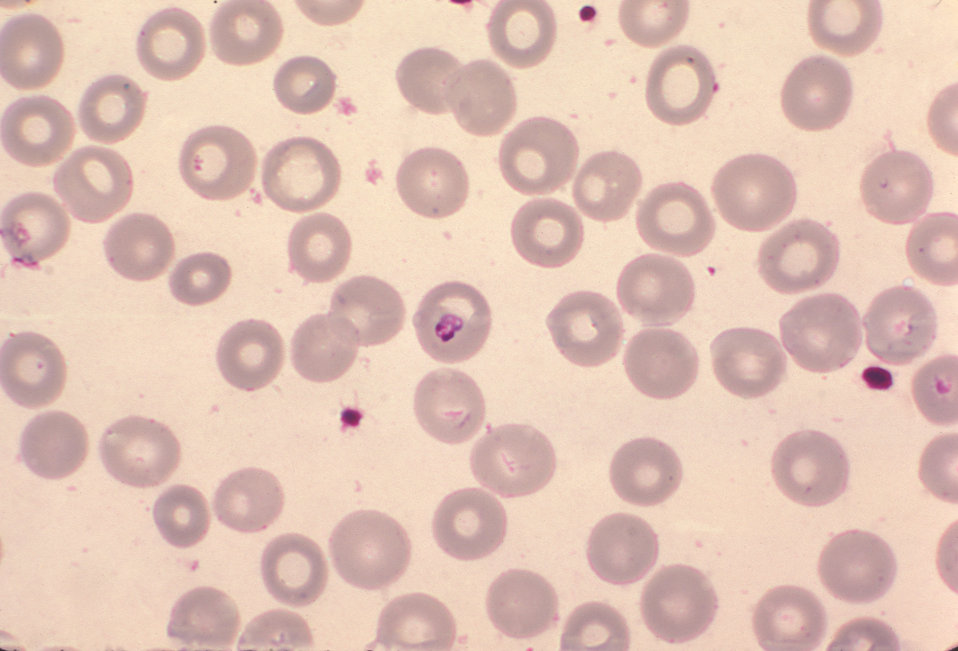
Babesia microti in blood smear. Giemsa stain. Parasite.